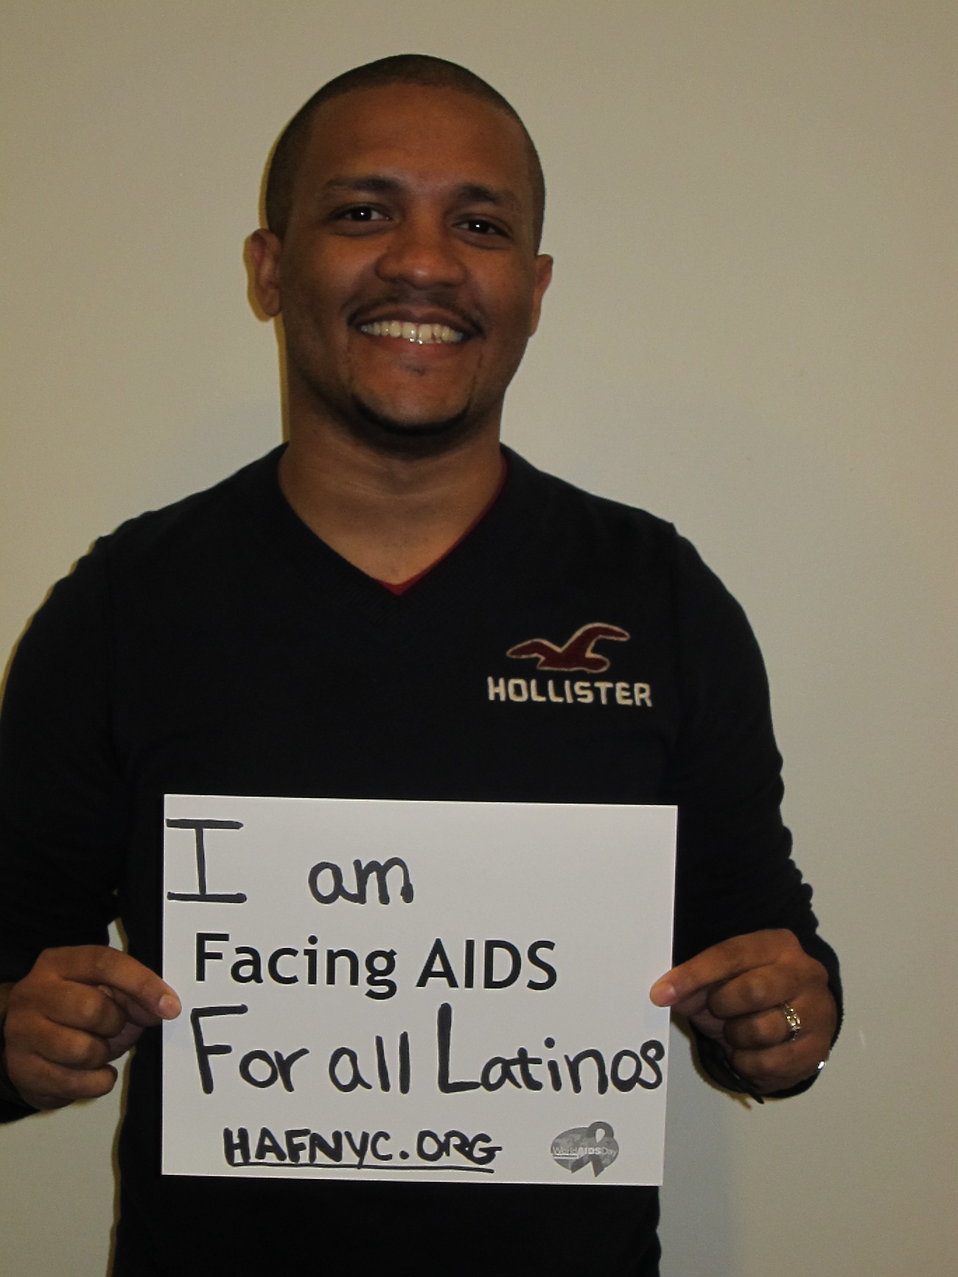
I am FACING AIDS for all Latinos.